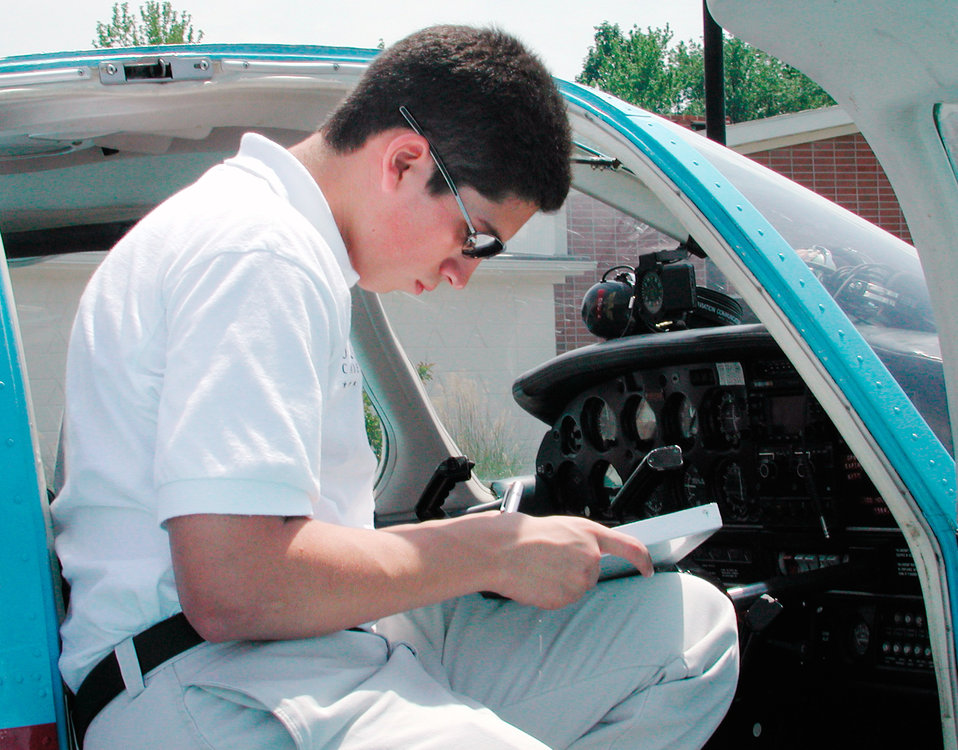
Checklist

DOVER AIR FORCE BASE, Del. -- Manuel R. Ochoa inspects a Piper Warrior during Flight Awareness Summer Training here recently. He is an Air Force ROTC cadet from New Mexico State University.